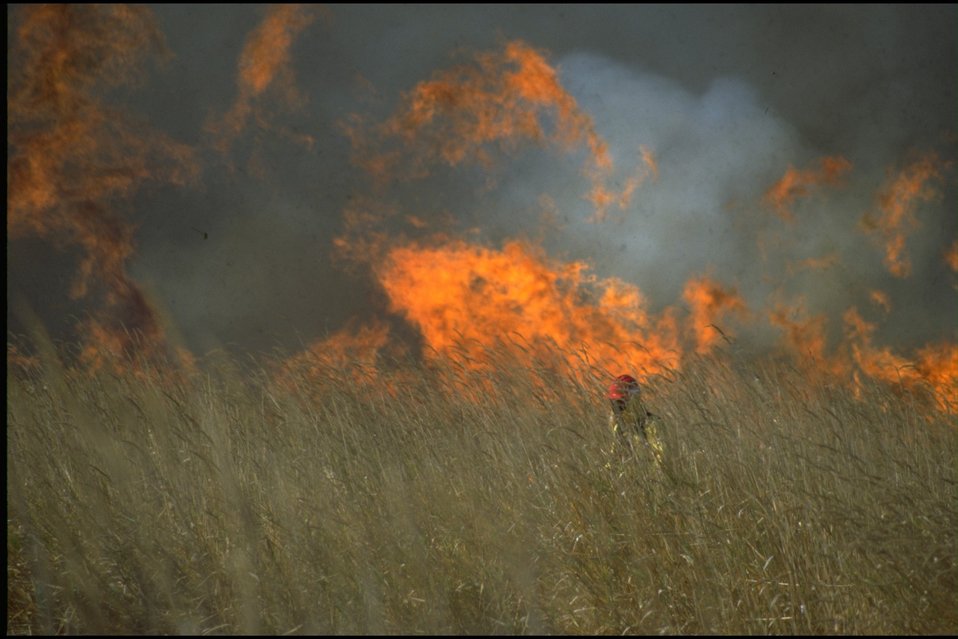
Turtle-Swale Wetland Burn.